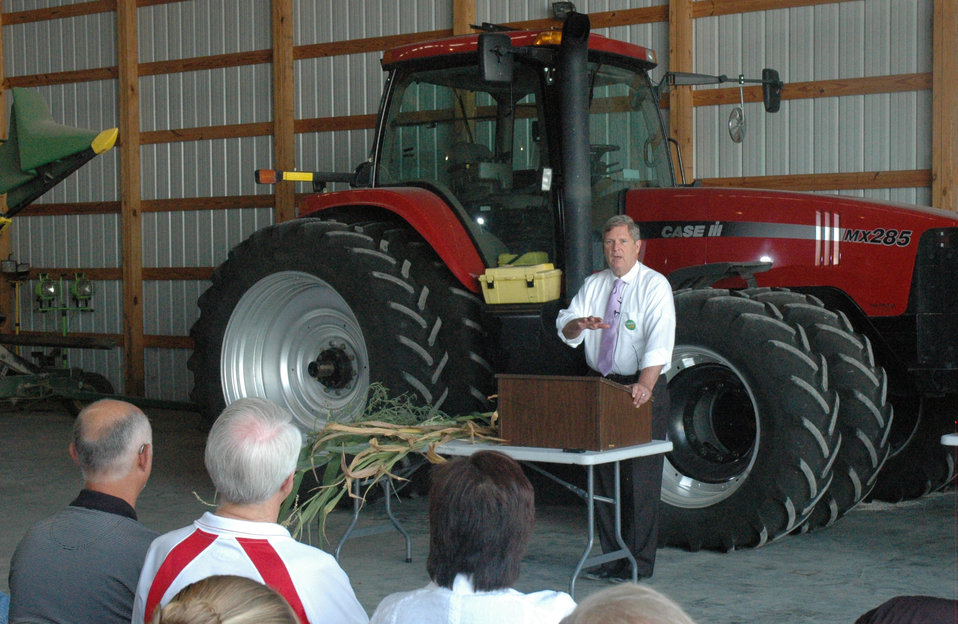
Agriculture Secretary Tom Vilsack met with producers, industry and business leaders in Prairie City, Iowa on Tuesday, July 24, 2012 to discuss the ongoing drought and USDA's efforts to assist producers.

As of July 20, the U.S. Department of Agriculture has designated 1,055 counties across the country as disaster areas due to drought. According to the most recent U.S. Drought Monitor report, 88 percent of our nation's corn and 87 percent of our soybeans are in drought-stricken areas.